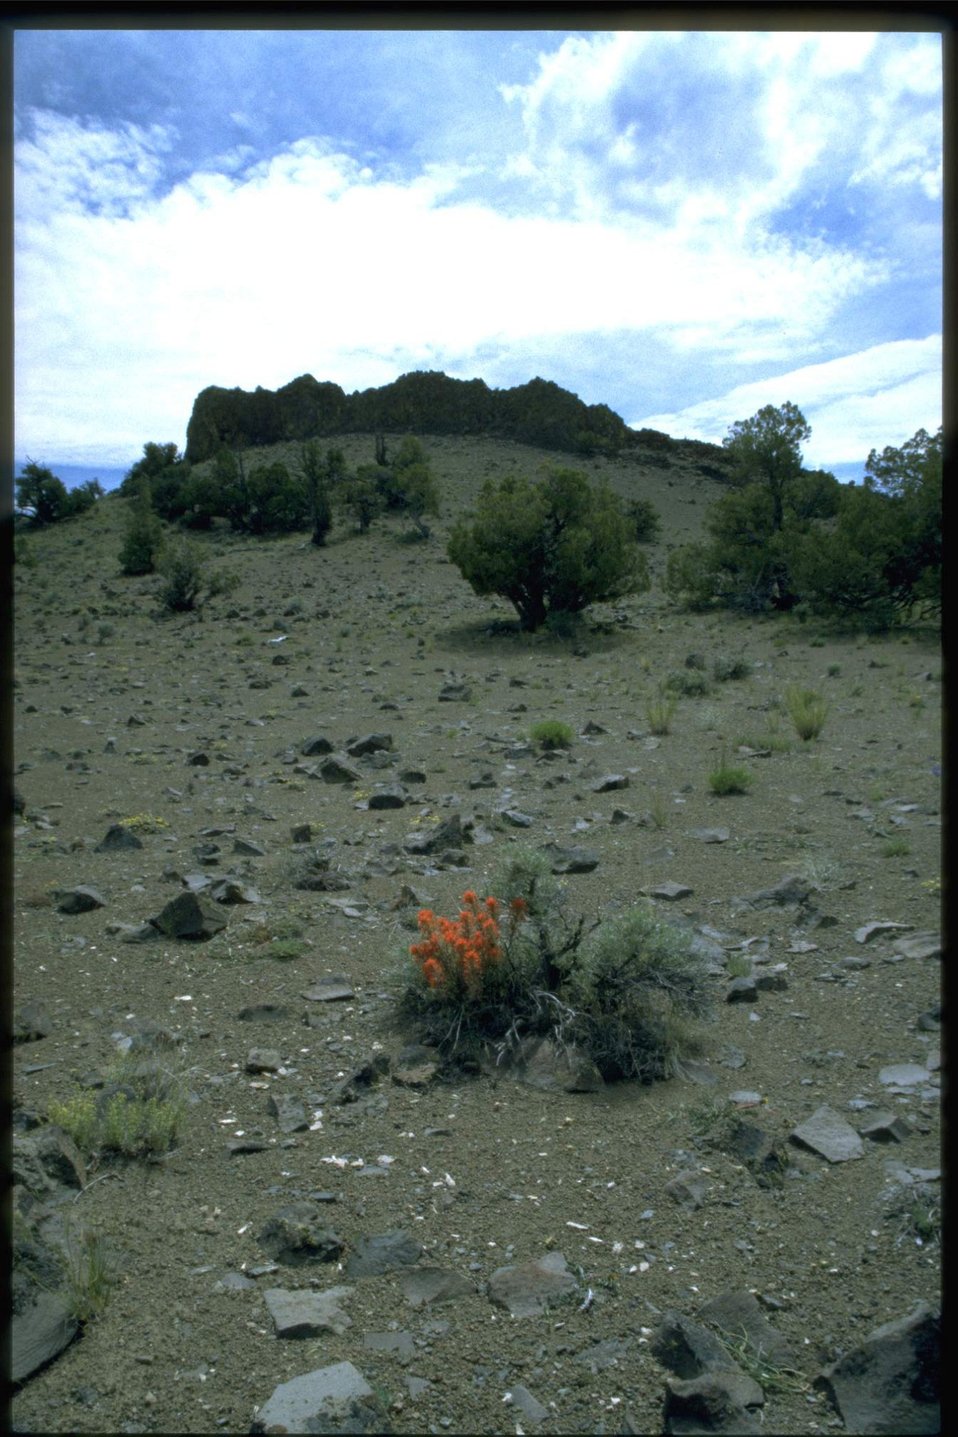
Farshot of Indian Paintbrush habitat.